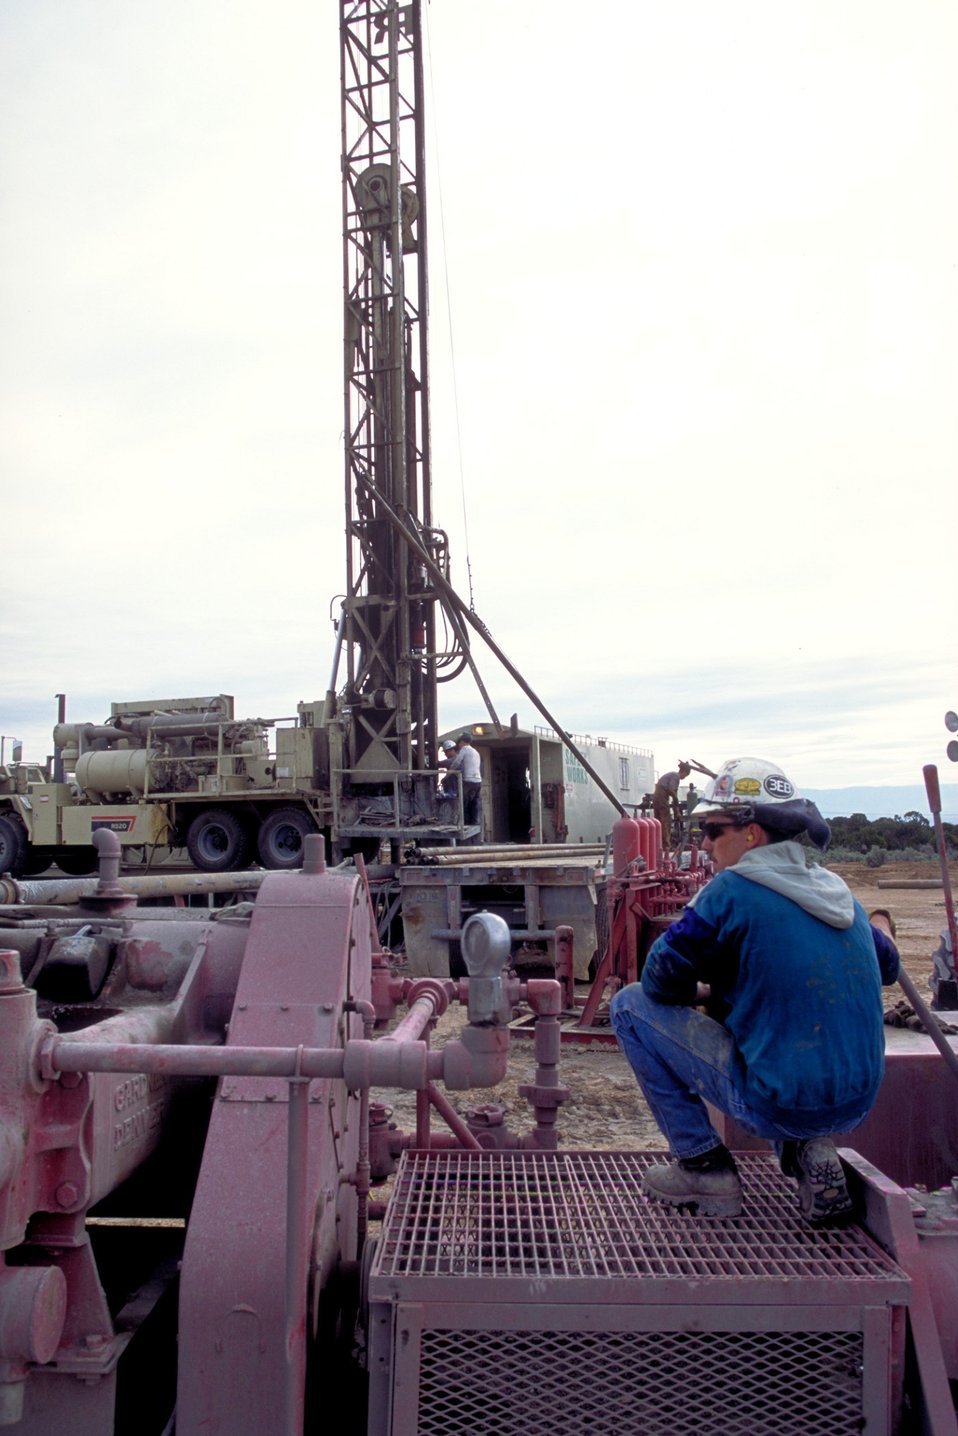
Drilling for coal bed methane near Price, Utah.